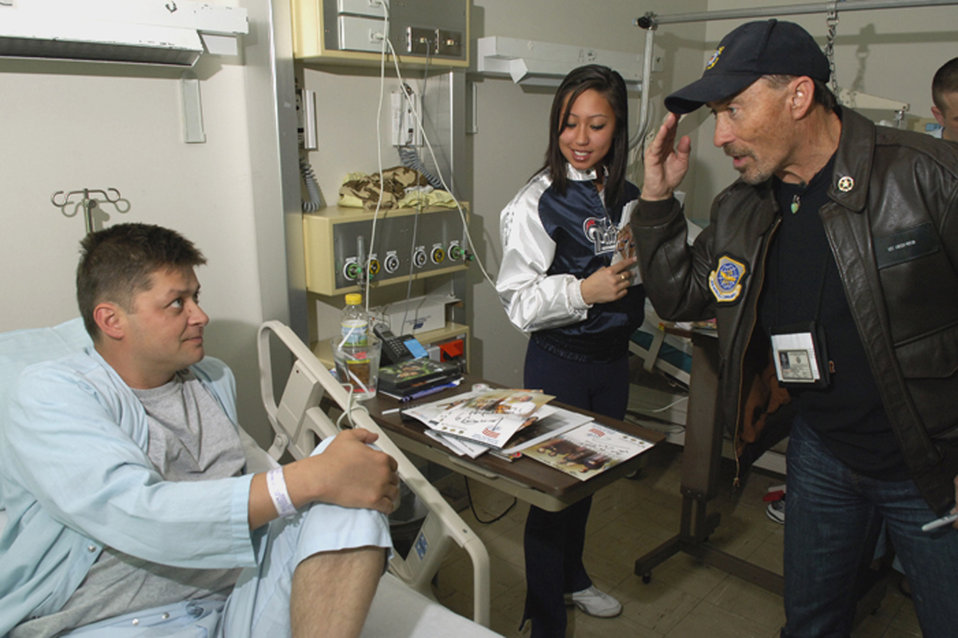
Patriotic World Tour

Lee Greenwood salutes a military patient at the U.S. Army Hospital at Landstuhl, Germany, on the first stop of his tour. With him is New England Patriots Cheerleader Briana Wei-Yee.